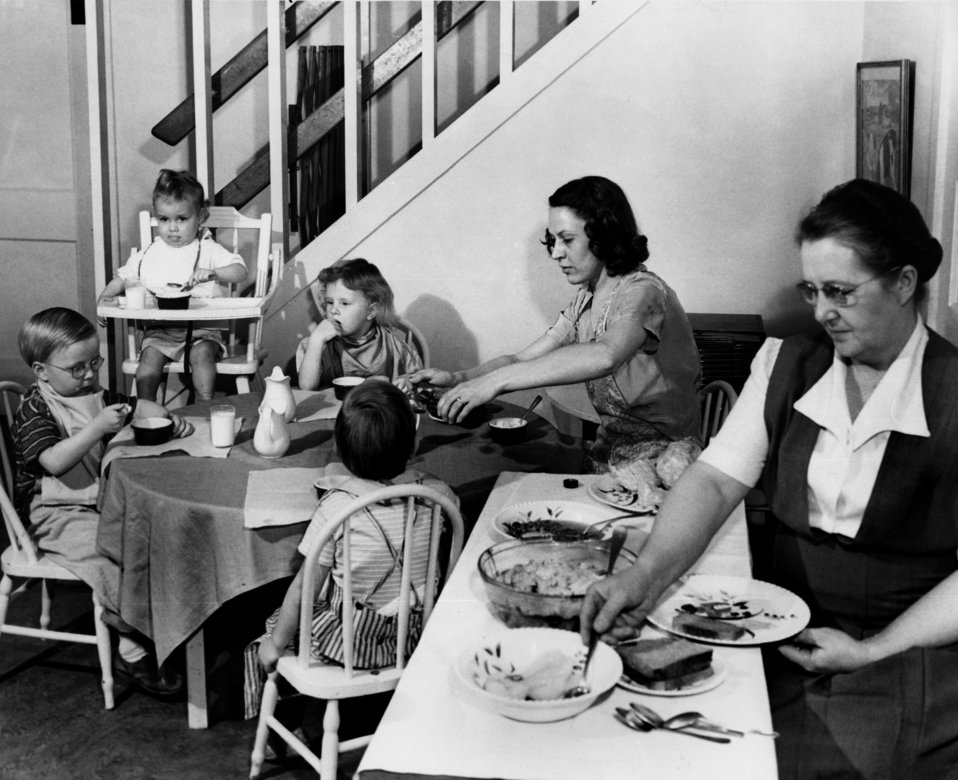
Children Around Table Eating at Nesper House Oak Ridge

4354-1 DOE photo Ed Westcott 3-1-1948 Nesper House was a daycare for working mothers/famlies Oak Ridge Tennessee